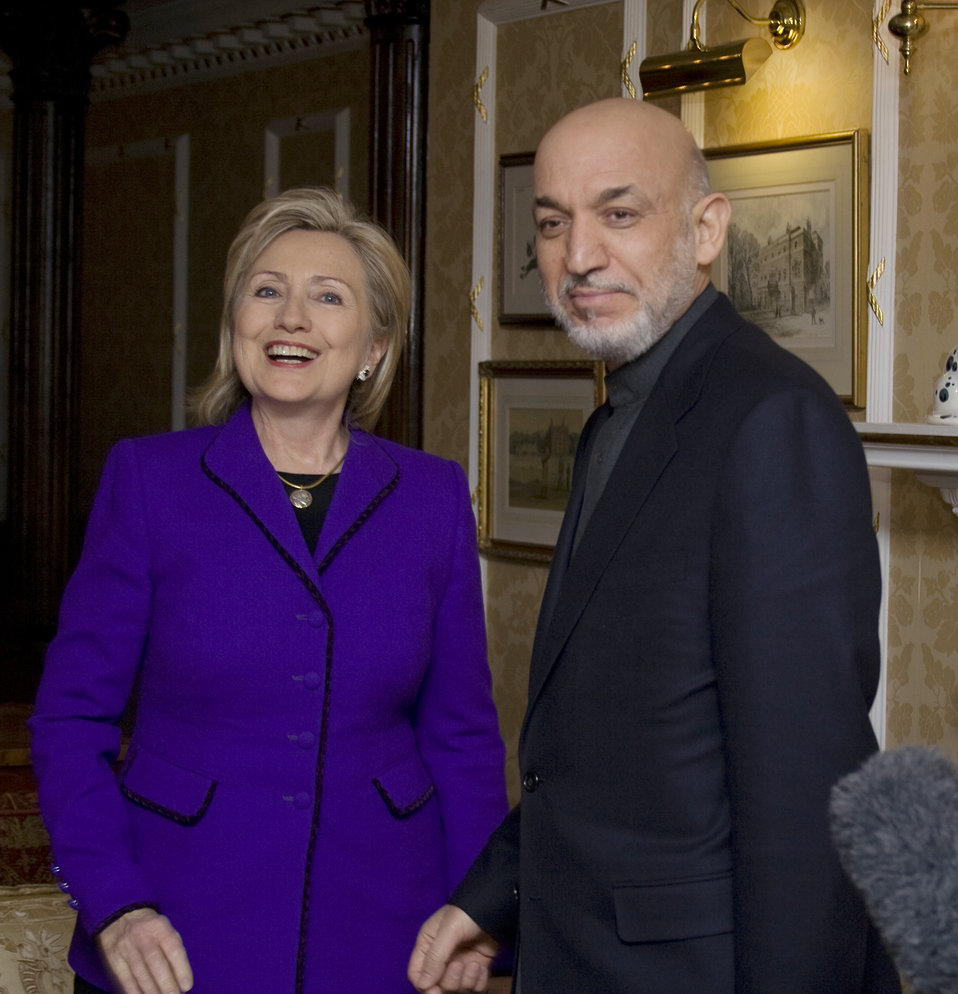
Secretary Clinton With President Karzai

U.S. Secretary of State Hillary Rodham Clinton meets with President of Afghanistan Hamid Karzai in London, January 28, 2010.